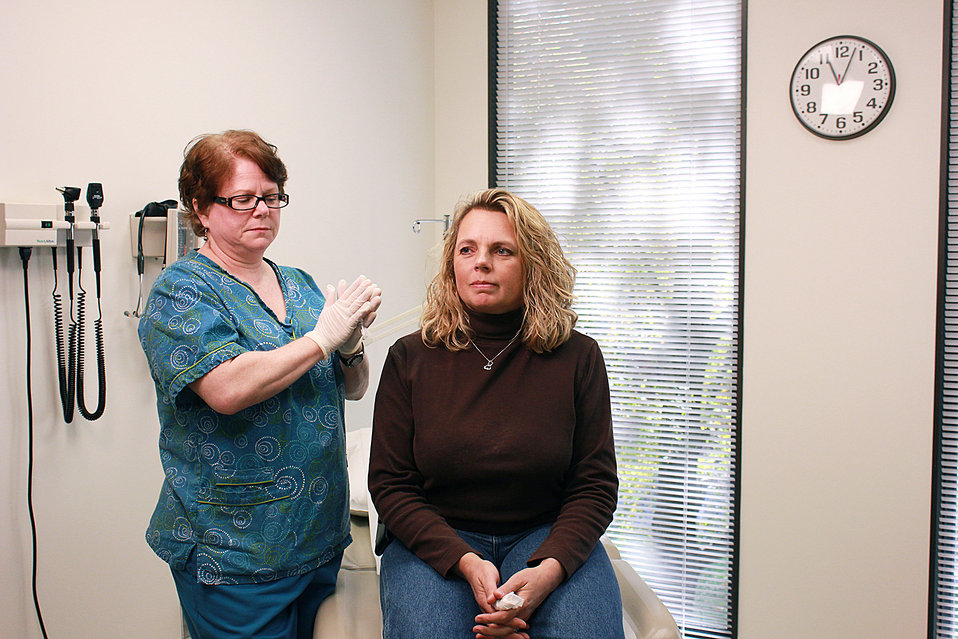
This image depicts a qualified nurse in a clinical setting, who was about to administer a dosage of FluMist� live attenuated intranasal vaccine LAIV) into the nasal cavity of a female patient. In this particular view, the nurse was rolling the nasal vaccine sprayer between her hands, gently mixing the contents prior to its administration.